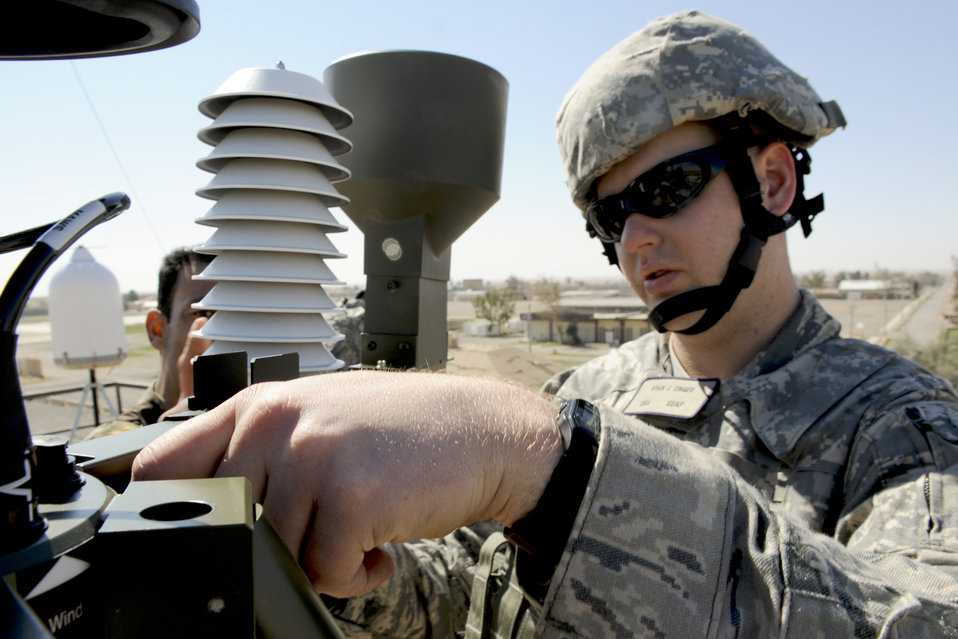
Airmen deliver weather gear to Iraqi air force

Senior Airman Ryan Unger installs a TMQ-53 weather observation system March 2, 2011 at Qayyarah West Airfield, Iraq. Airman Unger was part of a three-man weather team that traveled from Baghdad to retrieve U.S. Air Force equipment and install a newly purchased system as part of an ongoing process to set up a self-sustained Iraqi military weather service. Airman Unger is a 22nd Expeditionary Weather Squadron weather technician.